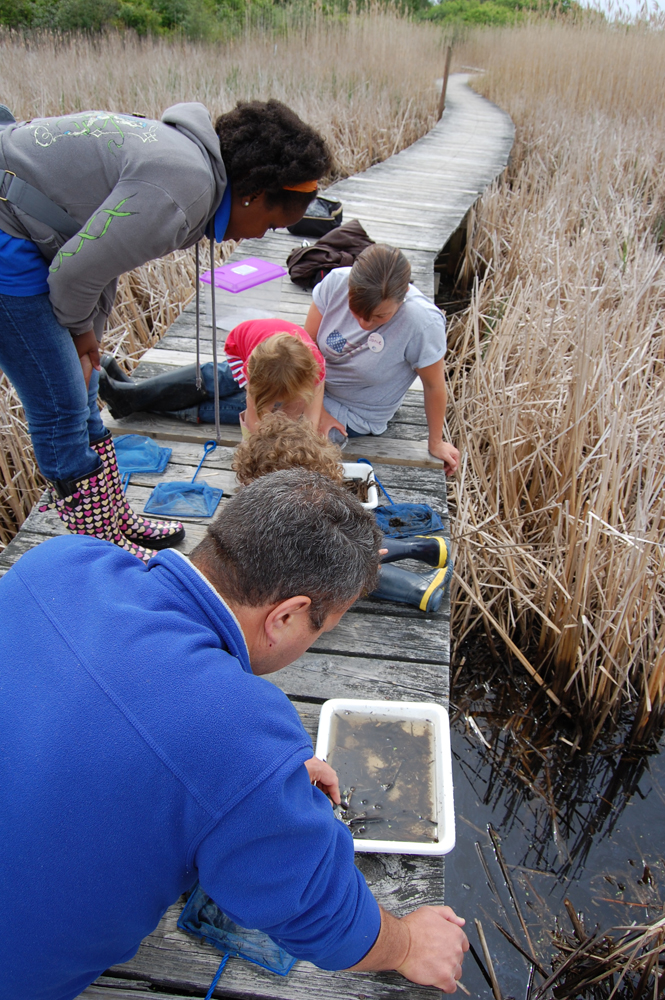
Sense of Wonder Camp

Sring 2009 session of the Sense of Wonder Camp, a camp for children ages 3-4 at Parker River National Wildlife Refuge.Credit: Kate Toniolo/USFWS